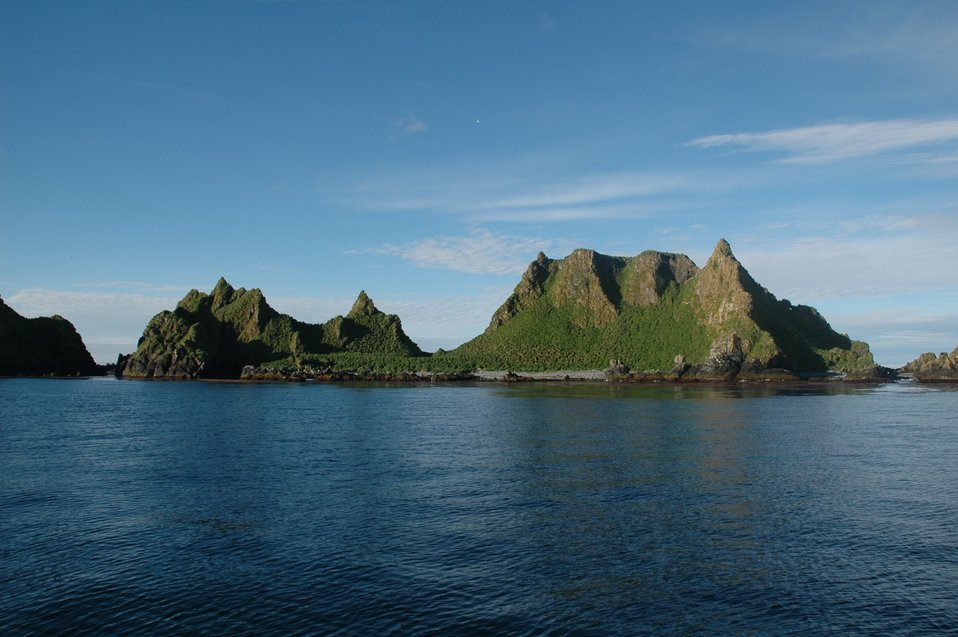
Outlying islets